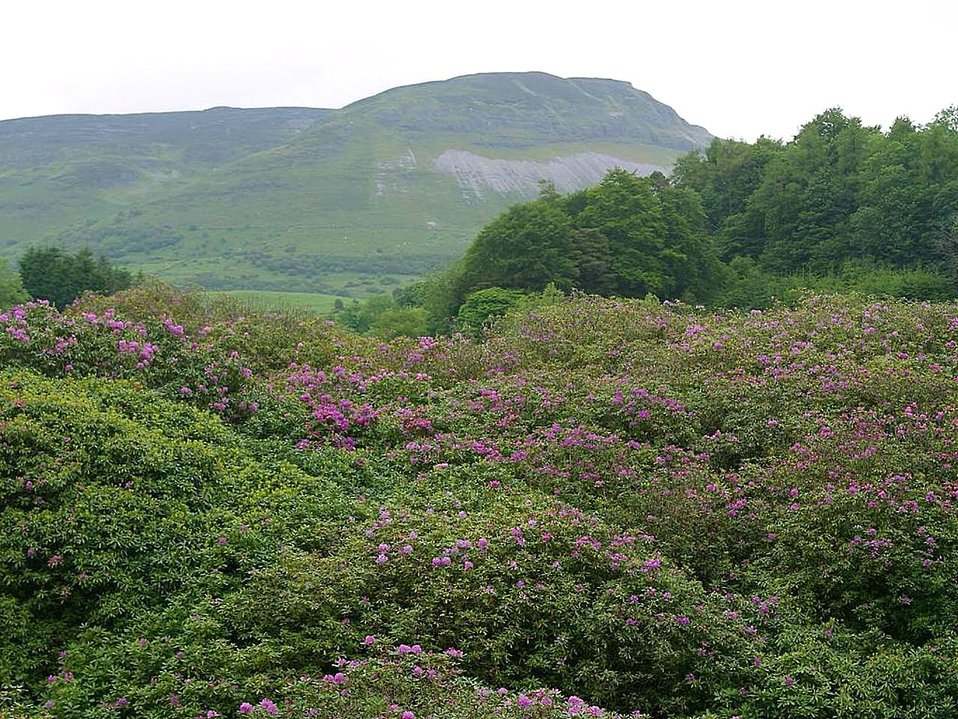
English:
Image title: Beautiful deer park Image from Public domain images website, http://www.public-domain-image.com/full-image/nature-landscapes-public-domain-images-pictures/gardens-and-parks-public-domain-images-pictures/beautiful-deer-park.jpg.html